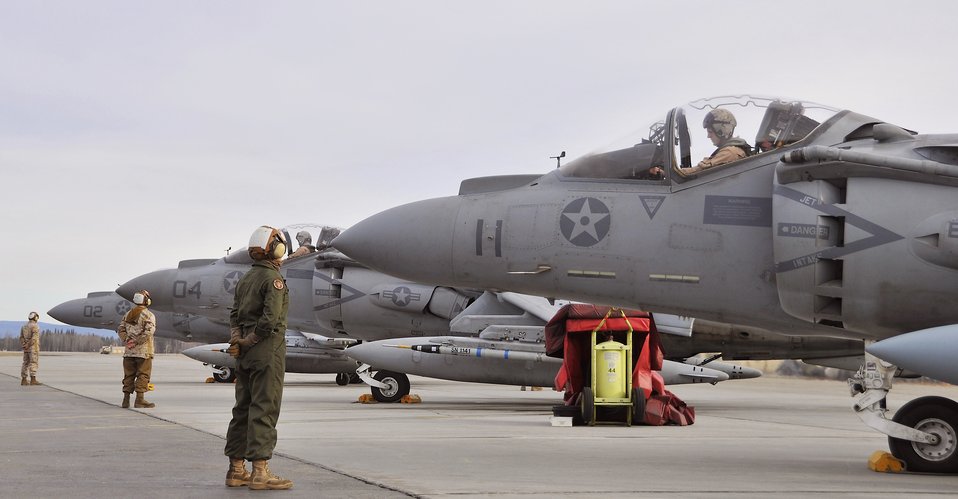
Red Flag-Alaska takes off

U.S. Marine AV-8B Harriers prepare to launch during Red Flag-Alaska 10-2, April 19, 2010, at Eielson Air Force Base, Alaska. The Harriers are assigned to VMA-211 at Marine Corps Air Station Yuma, Ariz.